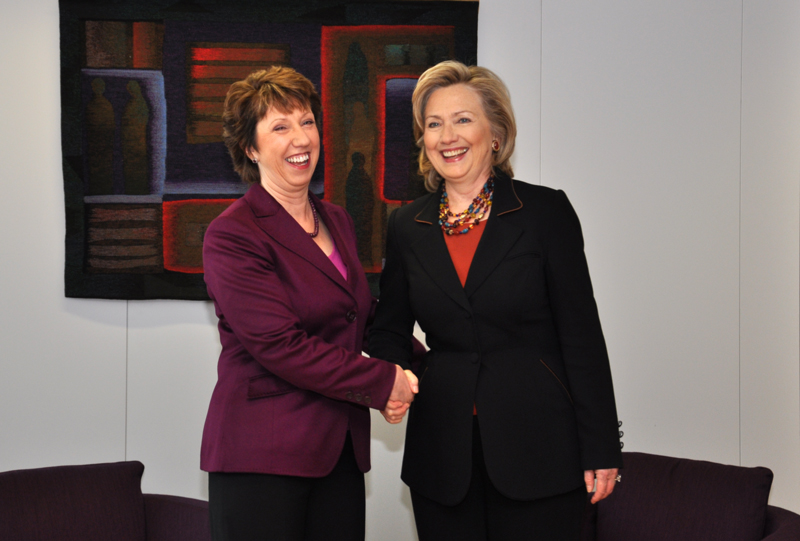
Secretary Clinton Meets With EU High Representative Ashton

U.S. Secretary of State Hillary Rodham Clinton meets with EU High Representative for Foreign Affairs and Security Policy, and Vice President of the European Commission, Catherine Ashton in her office at Berlaymont building in Brussels, Belgium, on October 14, 2010.